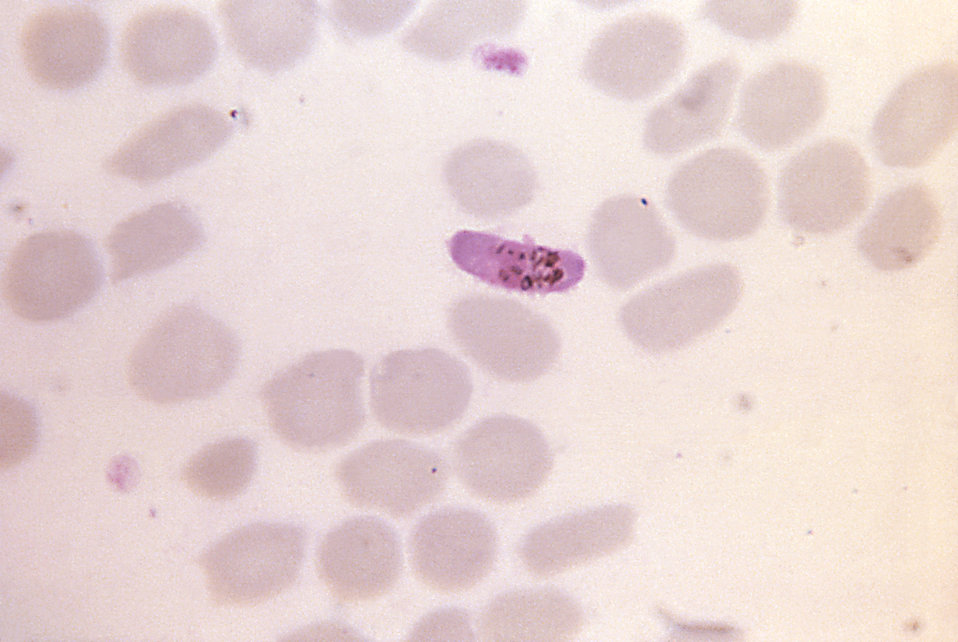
This thin film micrograph reveals a reddish colored Plasmodium falciparum microgametocyte with distinct pigment.